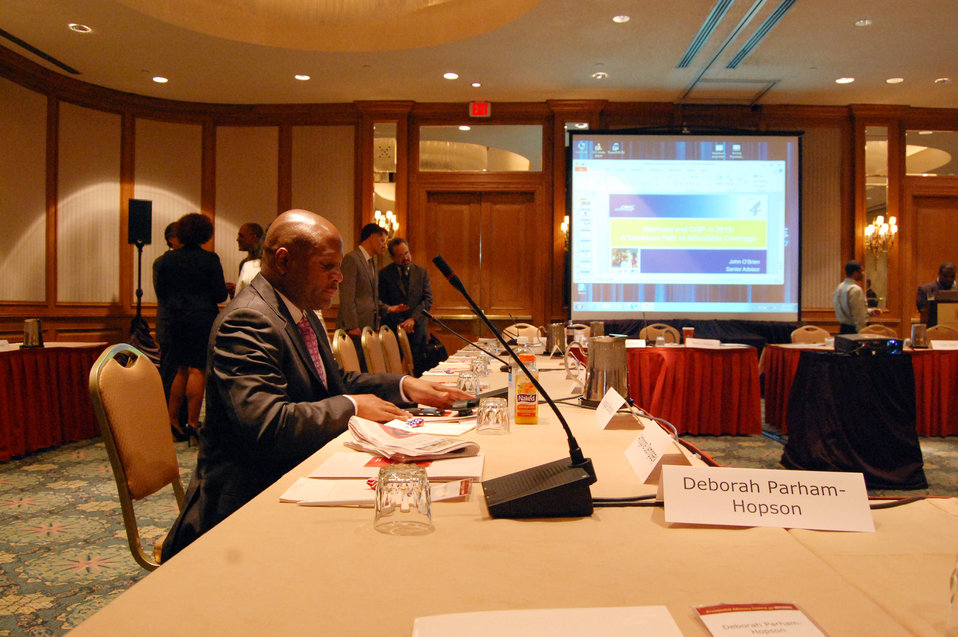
PACHA conf028